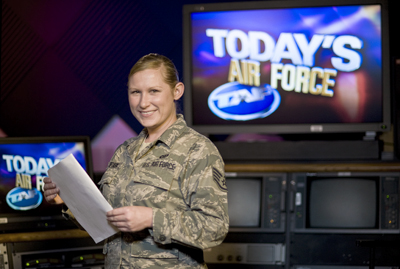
Today's Air Force